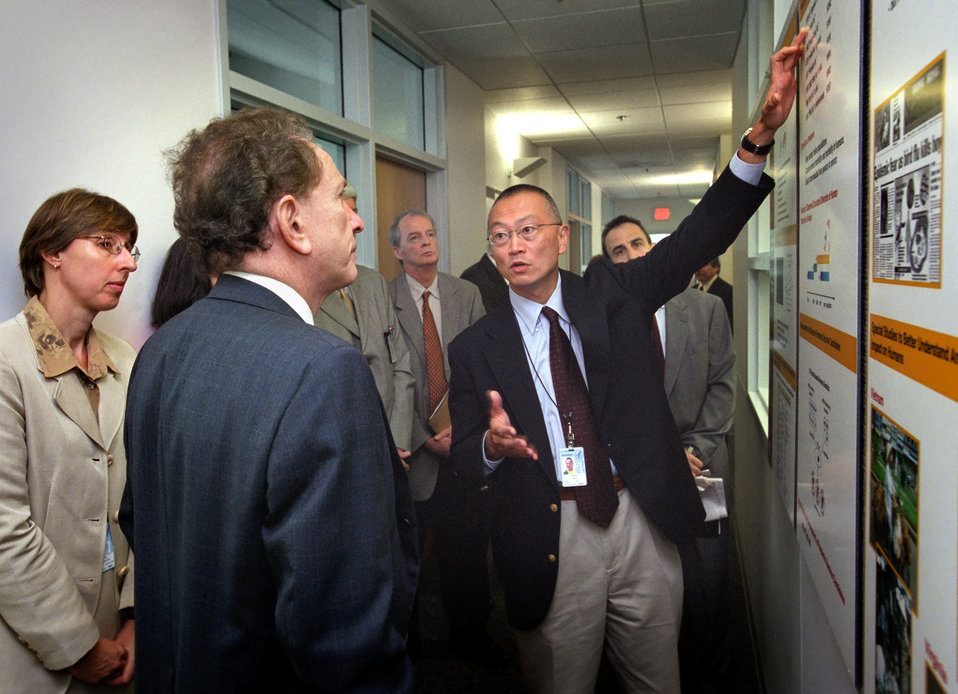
In the United States, the flu season can range from November through March, and even past March in some years.